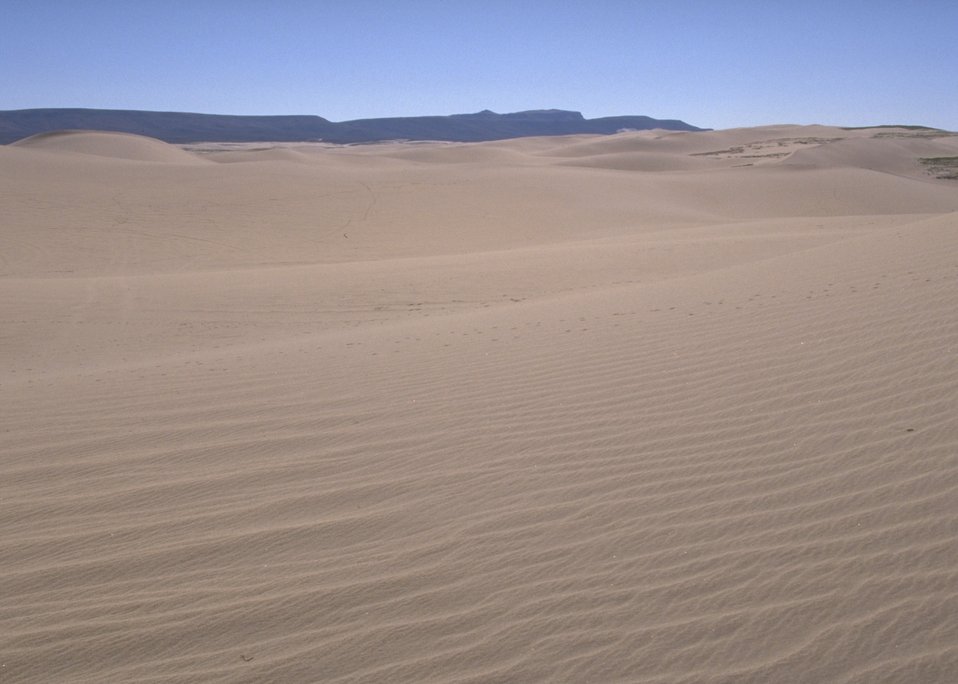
OHV Sand Dunes Area, Rock Springs Field Office.